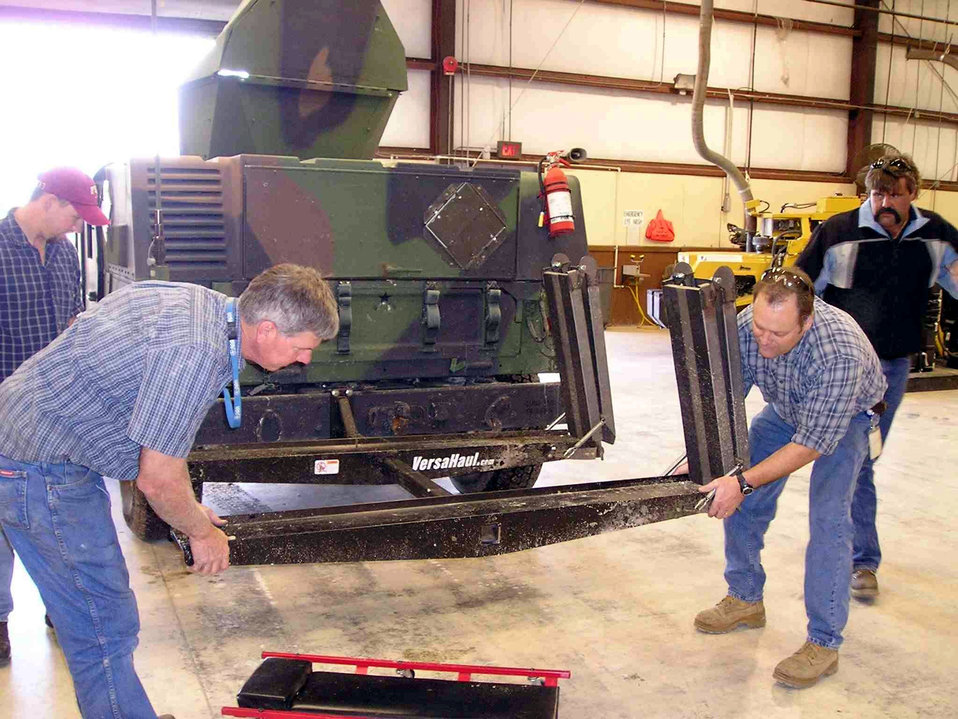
Making robot bumper mounts

TYNDALL AIR FORCE BASE, Fla. -- Al Hartzog (left) and Darrell Stepp position the modified bumper mount on an armored Humvee similar to the ones used in Operation Iraqi Freedom. Both men work at the materials and manufacturing directorate's force protection branch here.